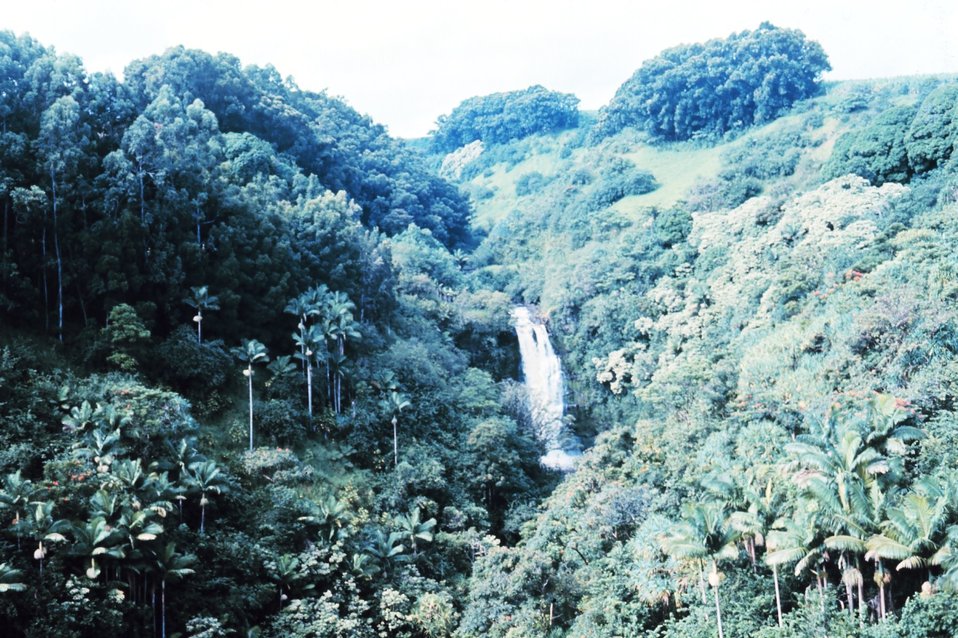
A beautiful waterfall in a lush valley